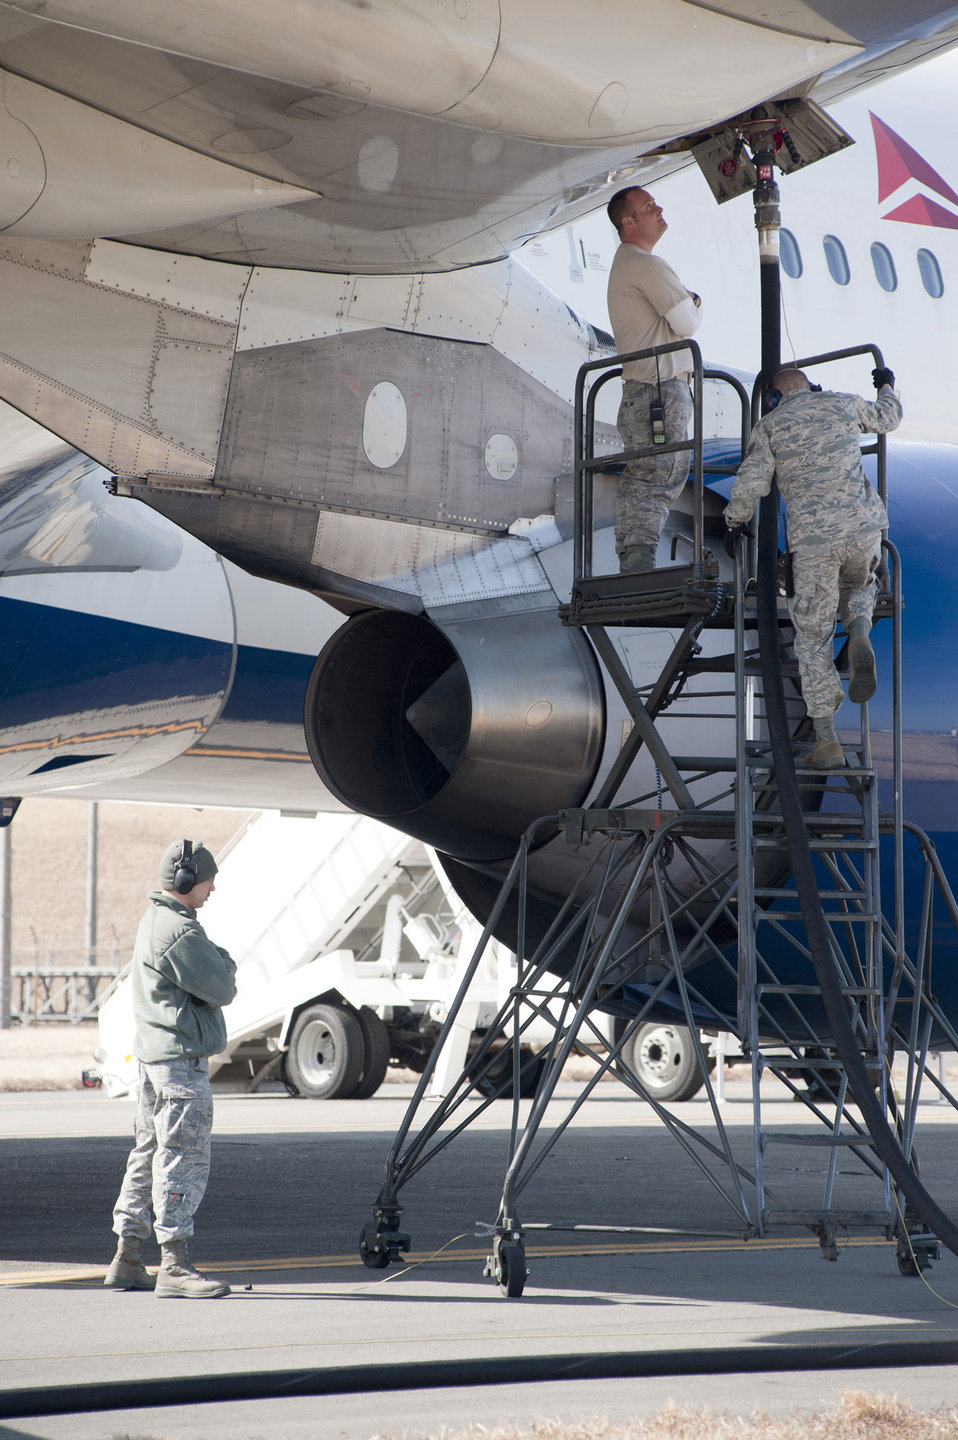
Delta Airlines flights take off safetly from Yokota

U.S. Air Force Airmen from the 374th Logistics Readiness Squadron refuel a Delta Airlines passenger aircraft at Yokota Air Base, Japan, March 12, 2011. The aircraft was diverted to Yokota from Narita International Airport after an 8.9-magnitude earthquake struck off the eastern coast of Japan.